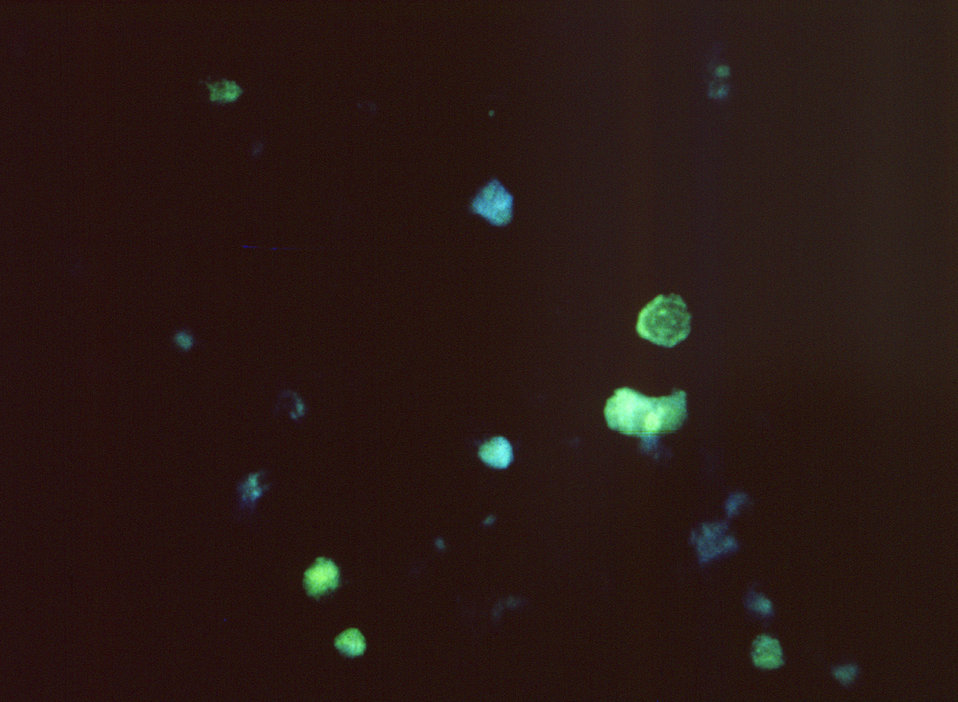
Using the fluorescent antibody (FA) staining technique, this photomicrograph revealed the cumulative effect of the Epstein-Barr virus on cells of unknown origin.